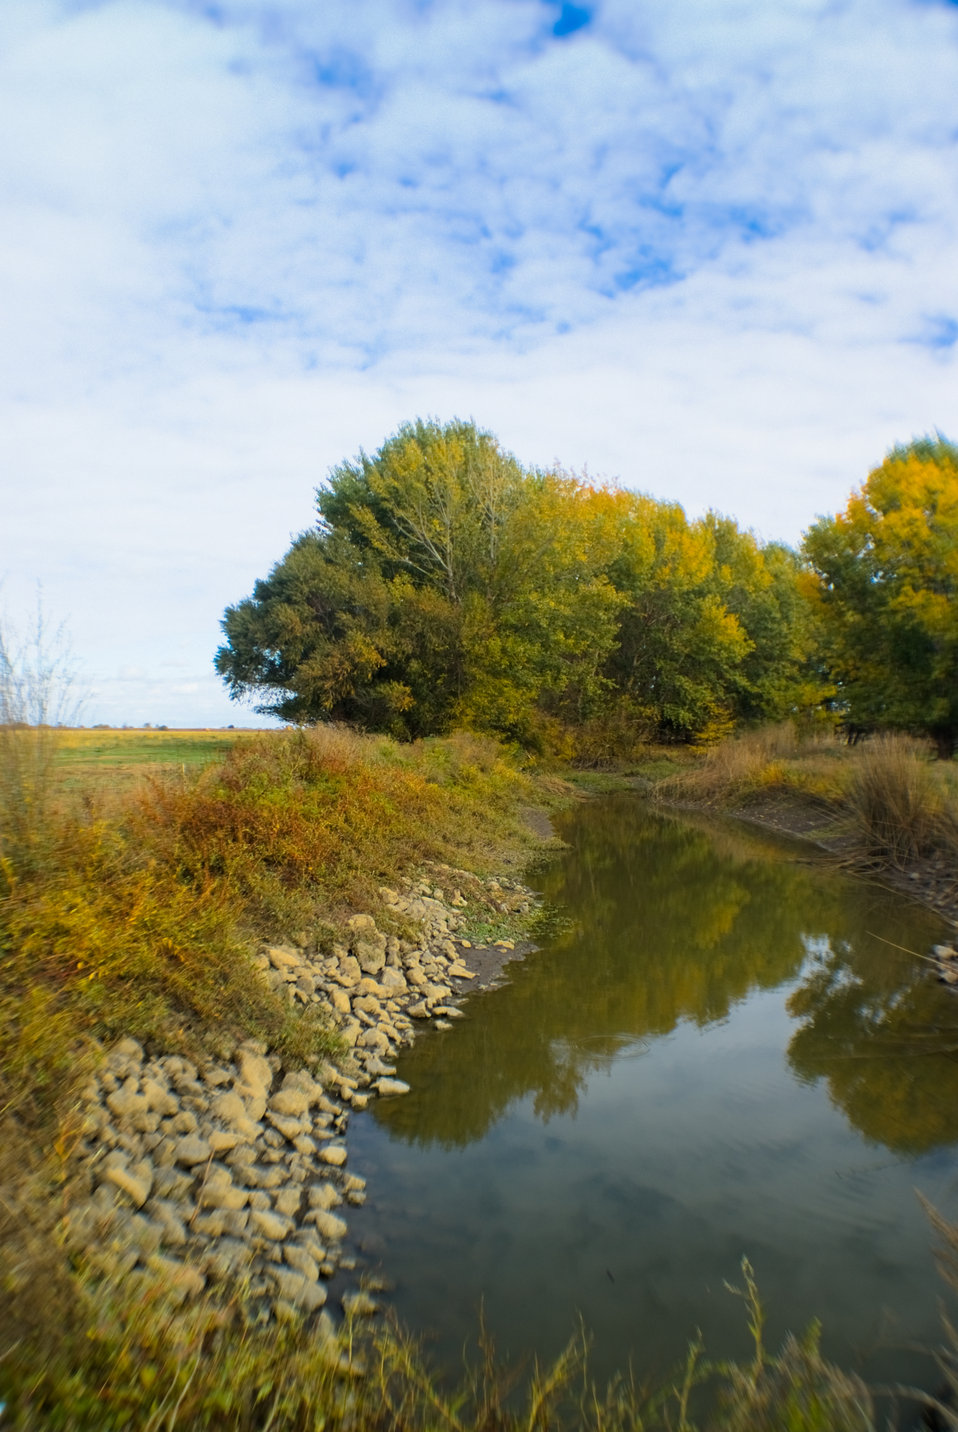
Merced National Wildlife Refuge Deadmans Slough Creek Canal

Merced National Wildlife Refuge. Deadmans Slough Creek canal repair. This project was funded by the American Recovery & Reinvestment Act of 2009.

The Merced National Wildlife Refuge encompasses 10,262 acres of wetlands, native grasslands, vernal pools, and riparian areas. It was established in 1951 under the Lea Act to attract wintering waterfowl from adjacent farmland where their foraging was causing crop damage. In the last few decades, changes in agricultural practices and Refuge management have reduced these wildlife/crop issues.

The Refuge plays host to the largest wintering populations of lesser Sandhill cranes and Ross’ geese within the Pacific Flyway. Each autumn over 20,000 cranes and 60,000 arctic nesting geese terminate their annual migrations from Alaska and Canada to make the Refuge home for six months. Here they mingle with thousands of other visiting waterfowl, waterbirds and shorebirds making the Refuge a true winter phenomenon.

The Refuge also provides important breeding habitat for Swainson’s hawks, tri-colored blackbirds, marsh wrens, mallards, gadwall, cinnamon teal, and burrowing owls. Tri-colored blackbirds, a colonial-nesting songbird, breed in colonies of over 25,000 pairs. Coyotes, ground squirrels, desert cottontail rabbits, beaver, and long-tailed weasels can also be seen year-round.

Vernal pools are another type of wetland found on the Merced NWR. These special pools form when natural shallow depressions underlaid with clay soils fill with winter rainwater. The pools come to life as they fill with water: fairy and tadpole shrimp emerge from cysts embedded in the soils the previous year. The endangered tiger salamander, along with other amphibians lay eggs and rear tadpoles. The vast number of aquatic invertebrates found in these pools provides a food source for wintering and migrating birds as they prepare for the long flight north to their breeding grounds.